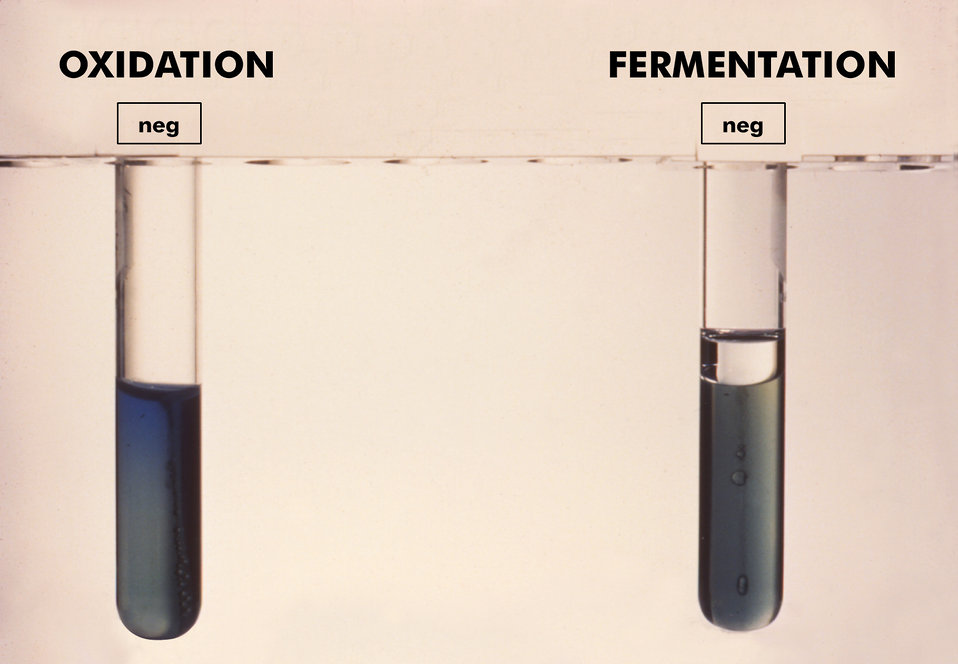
This test for Enterobacteriaceae shows that both oxidation and fermentation reactions were negative.